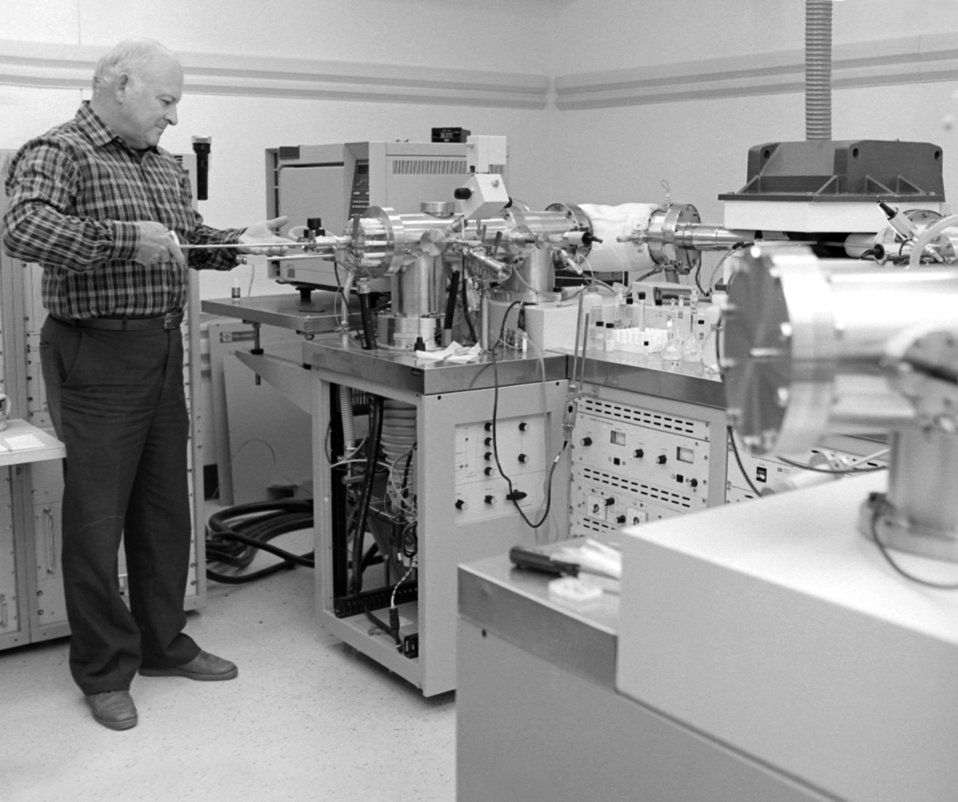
This staged photograph depicts Louis Alexander in the Toxicology Mass Spectrometry Lab working with a mass spectrometer device.